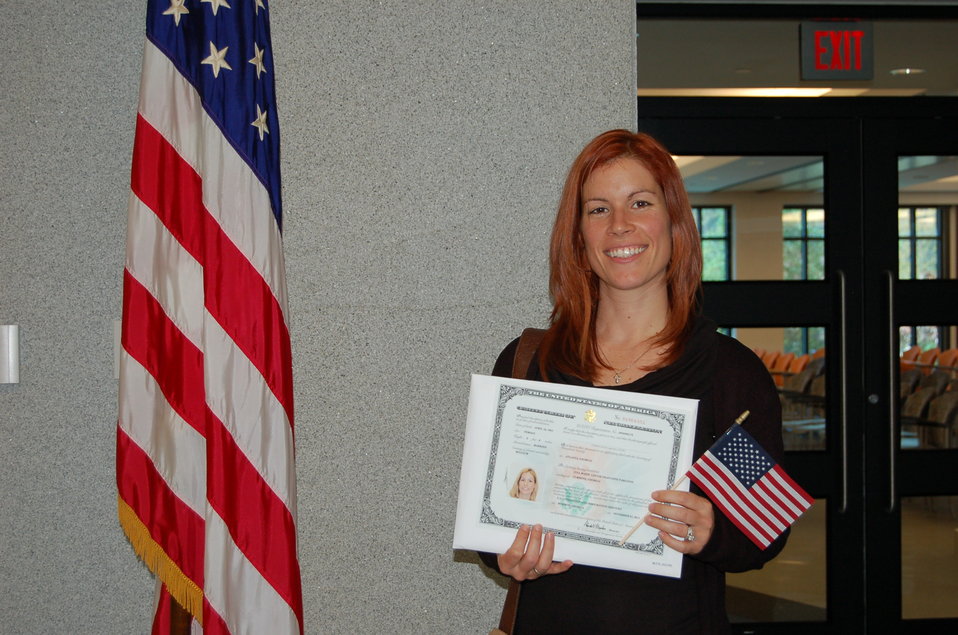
New Citizens